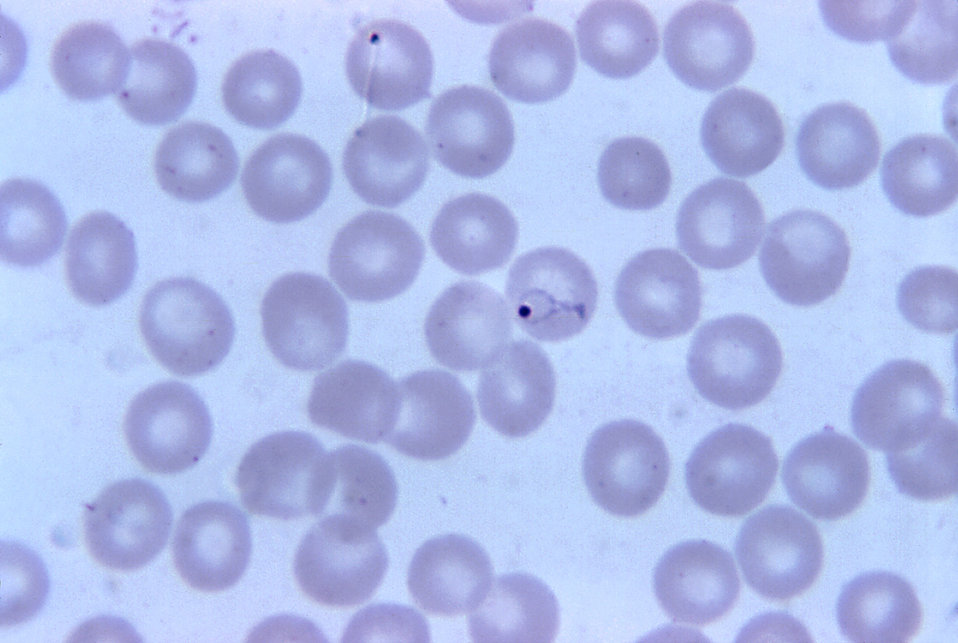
This thin film micrograph depicts a 'tennis racket'-shaped P. vivax ring, using Giemsa stain; Mag. 1125X.